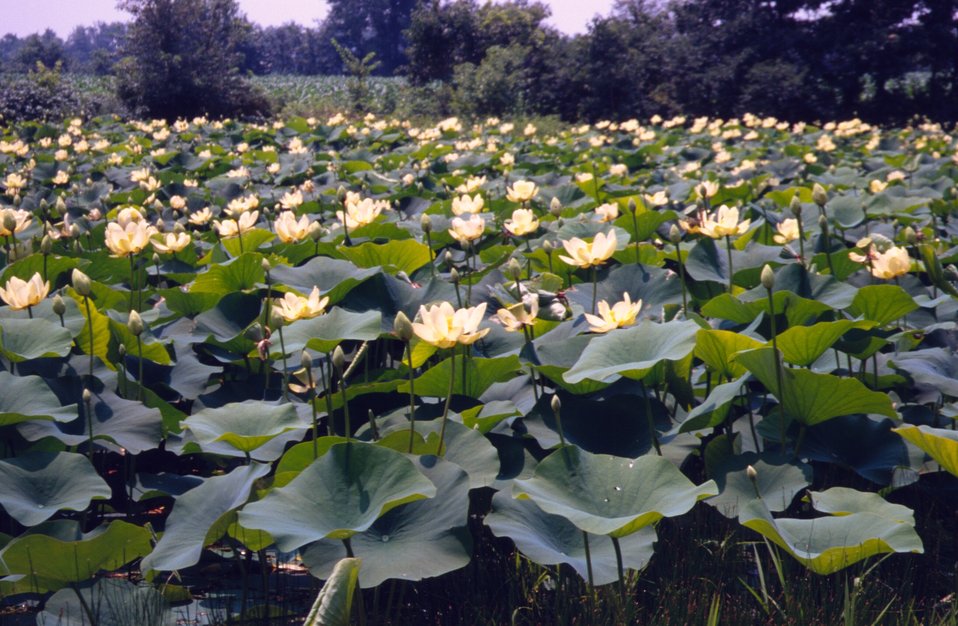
Lotus

Credit: Terry Heiser / USFWS

Photo Contest Entry #170